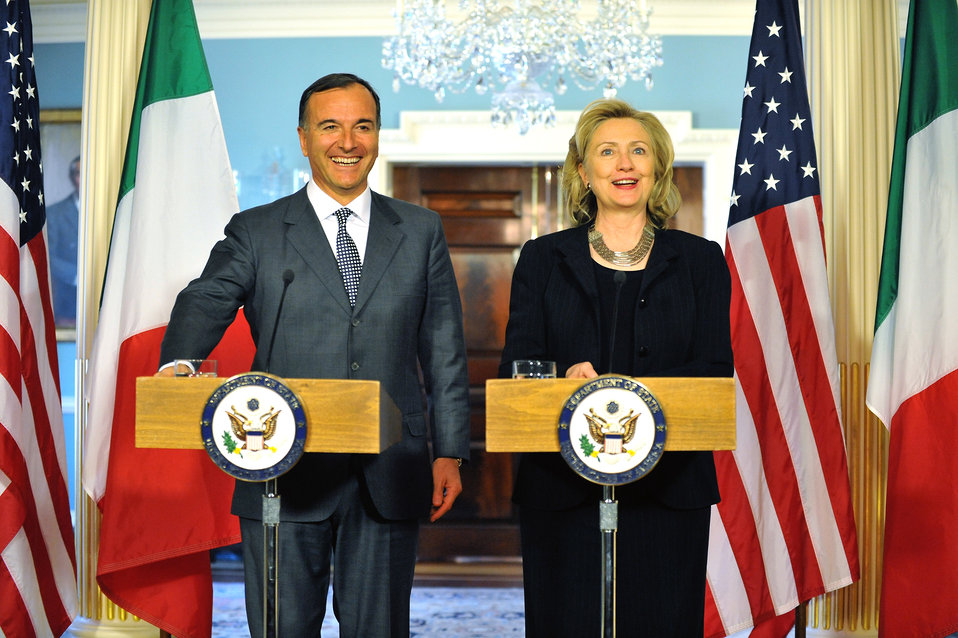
Secretary Clinton and Italian Foreign Minister Frattini Hold a Joint Press Conference

U.S. Secretary of State Hillary Rodham Clinton holds a joint press conference with Italian Foreign Minister Franco Frattini, at the U.S. Department of State in Washington, D.C., on April 6, 2011.